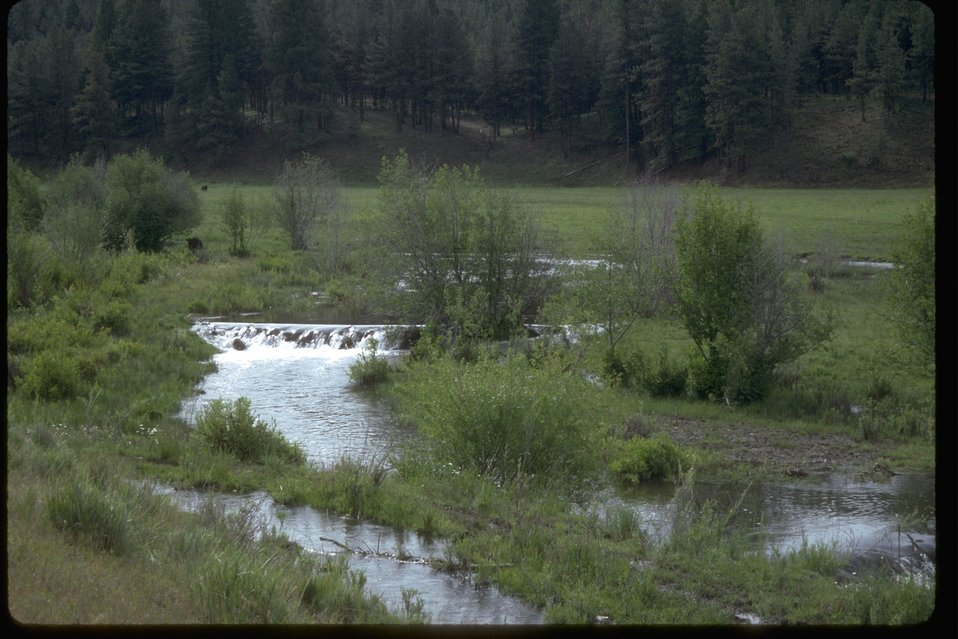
Long shot of a Beaver Dam in central Oregon.